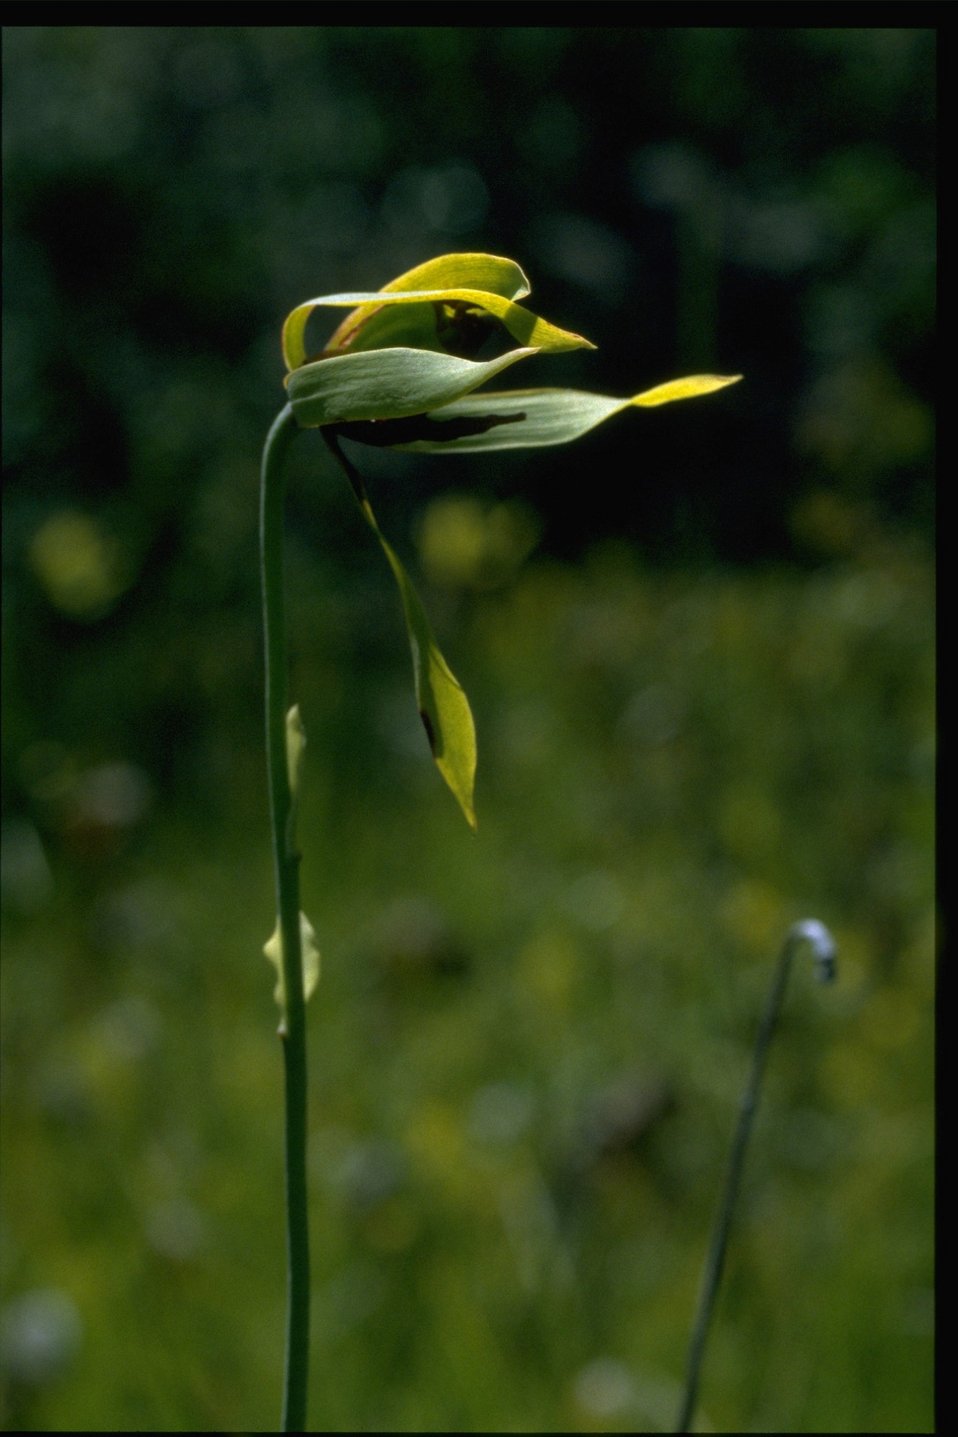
Medium shot of Darlingtonia californica.